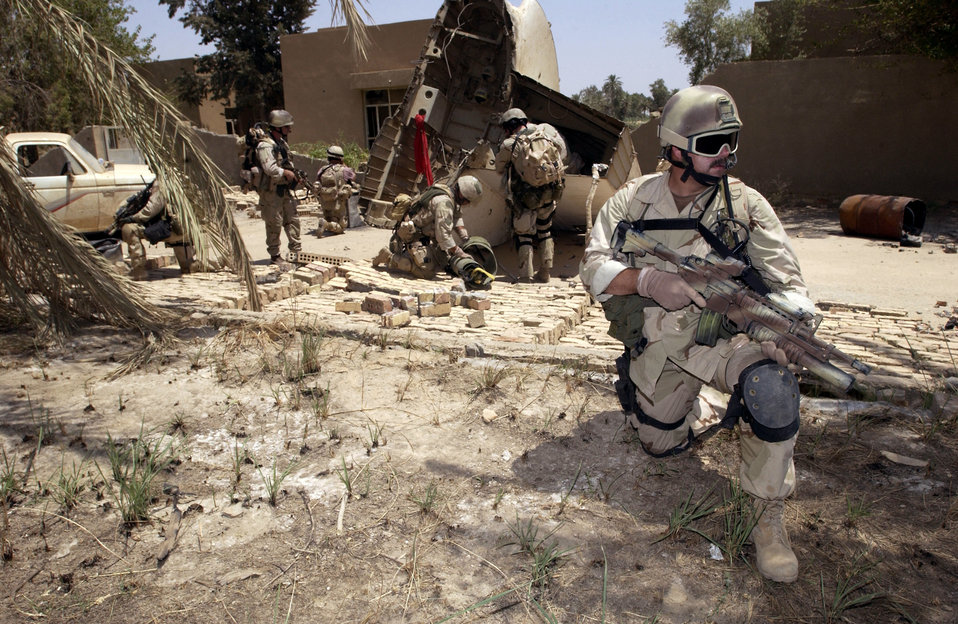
All secure

OPERATION IRAQI FREEDOM -- Master Sgt. Jon Swails, a pararescueman from the Oregon Air National Guard, pulls security while his team extracts a survivor from wreckage during an urban operations training exercise.